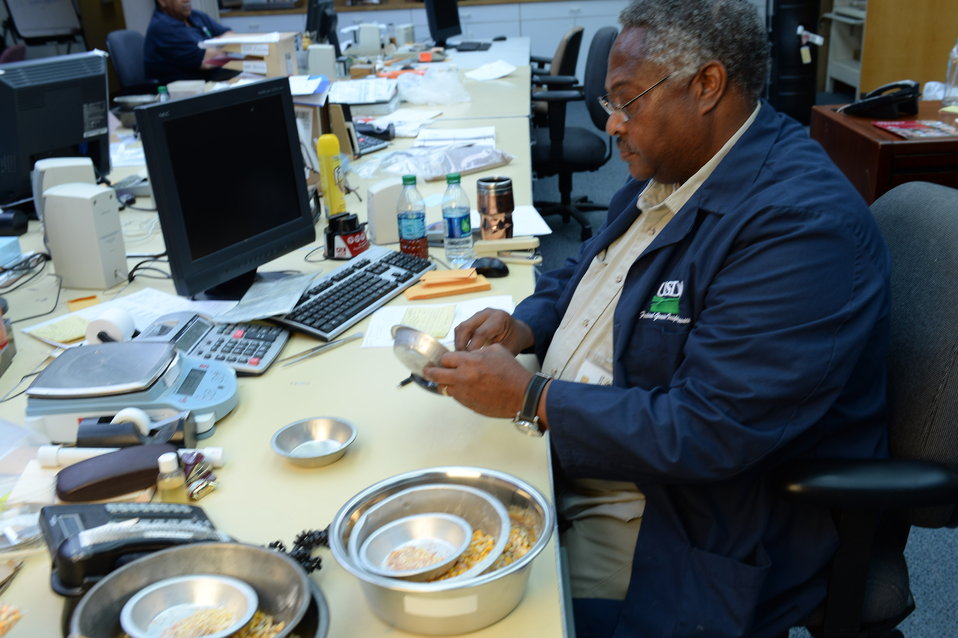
A U.S. Department of Agriculture (USDA) Grain Inspection, Packers and Stockyards Administration (GIPSA) Federal Grain Inspection Service (FGIS) scientist tests corn at the FGIS inspection laboratory in New Orleans, LA on Monday, Nov. 18, 2013.